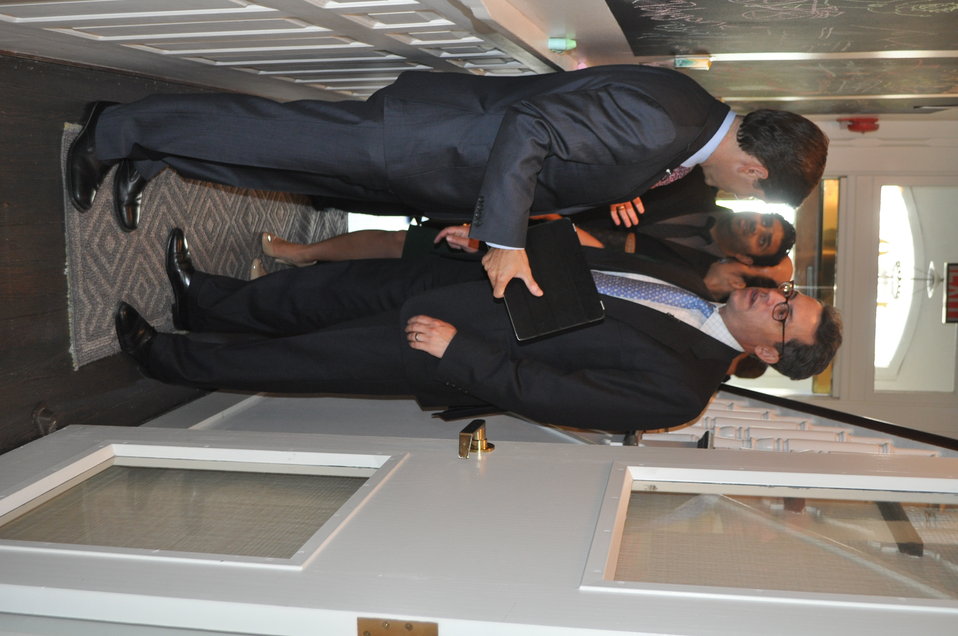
Broadband Challenges and Opportunities, at Vox Media